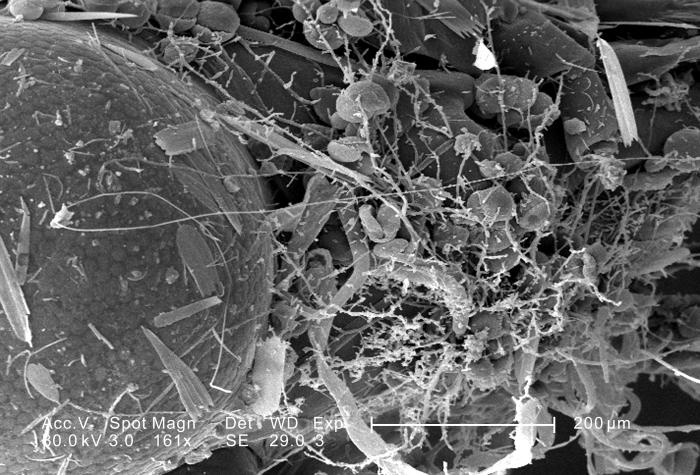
This scanning electron micrograph (SEM) depicted a highly magnified view of a compound eye and mouth region on the head of an unidentified green-colored flying insect found outside on the ground in the Decatur, Georgia suburbs; Magnified 161x. The debris covering the organism is mainly vegetative in nature, composed primarily of pollen granules, and disintegrated plant fibers.